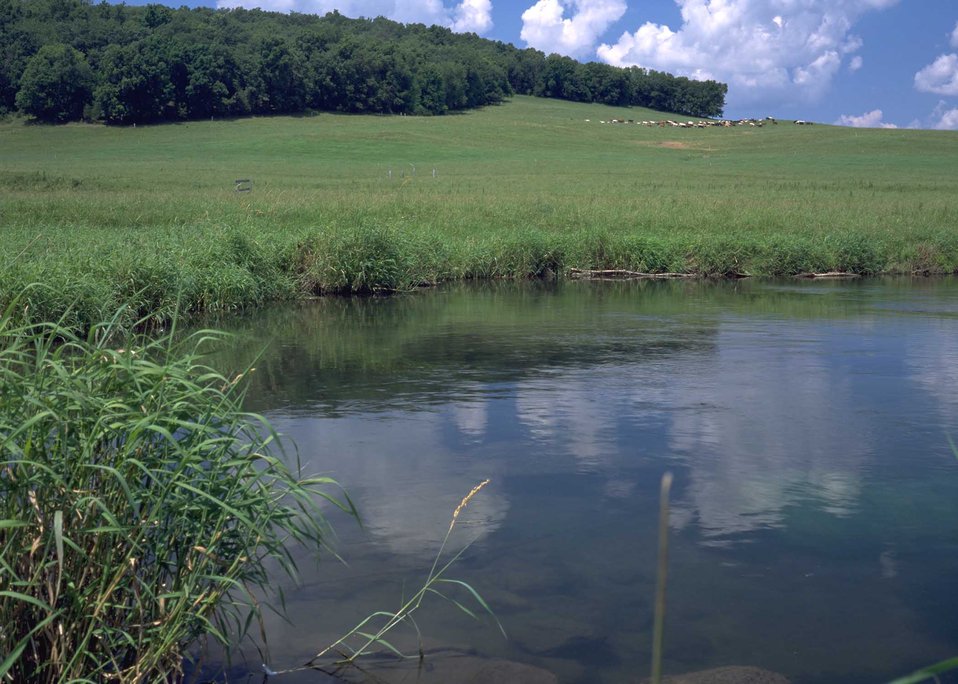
Rotational grazing and proper pasture management protects the trout stream that runs through the pasture. Class I trout stream in Columbia County, WI.